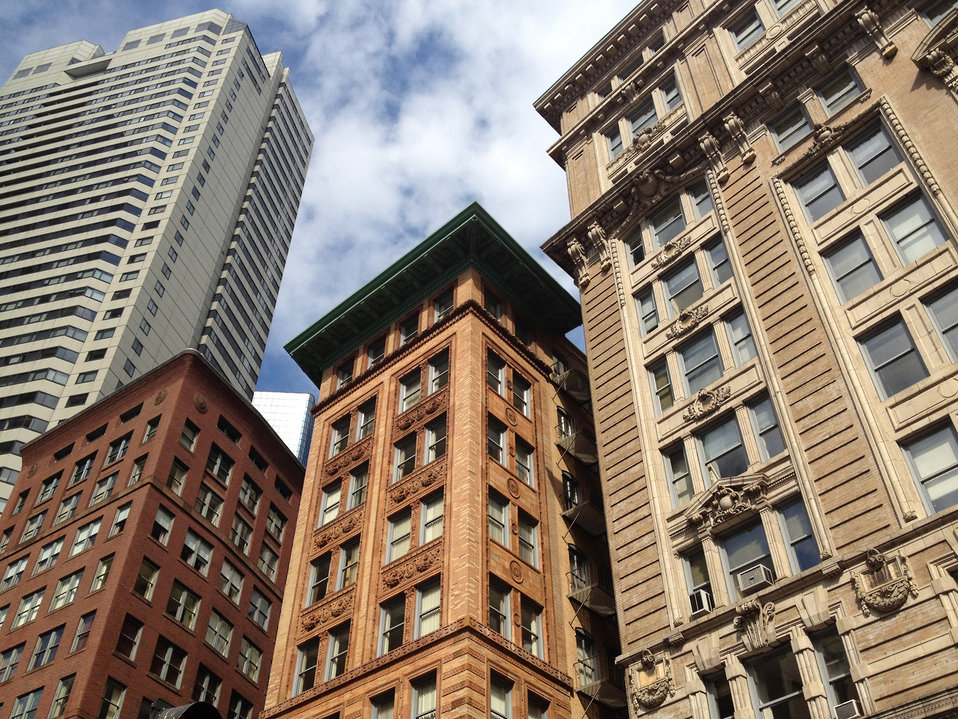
Downtown boston

Street in downtown boston, ma.